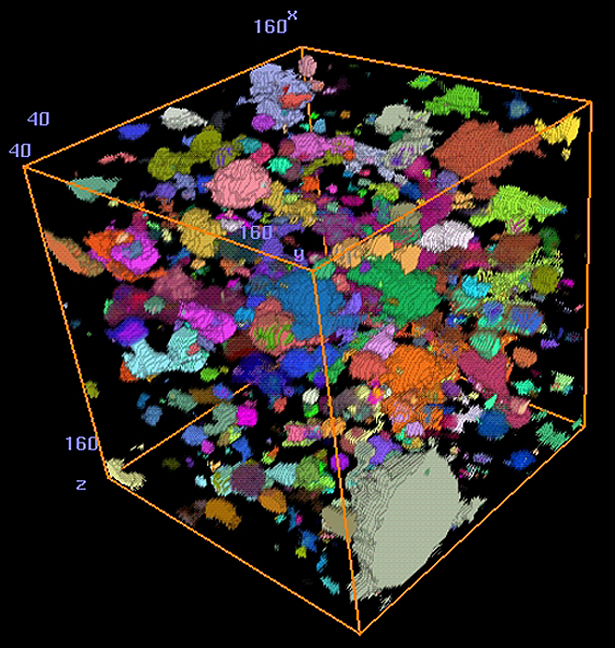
Fire science, fire-resistive materials, thermal conductivity

Microtomography image of the pore structure of a fireproofing material. The different colors identify different individual pores within the material, whose size and shape have a large influence on the thermal conductivity of the material at high temperatures.